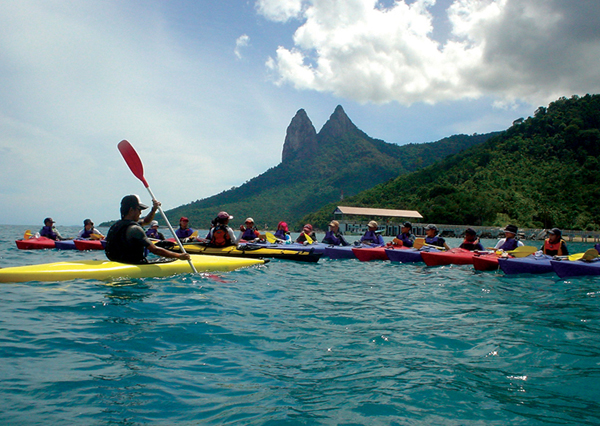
Uploaded by request of Joy Stevenson

Photo was taken in Tioman Island, Malaysia (Bali Hai from the 1958 Hollywood movie “South Pacific”)

The Grade 7 students (age 12-13) go to Tioman Island, off the east coast of Malaysia to earn a two-star kayaking certificate. They also kayak 24km down the coast and often see dolphins.